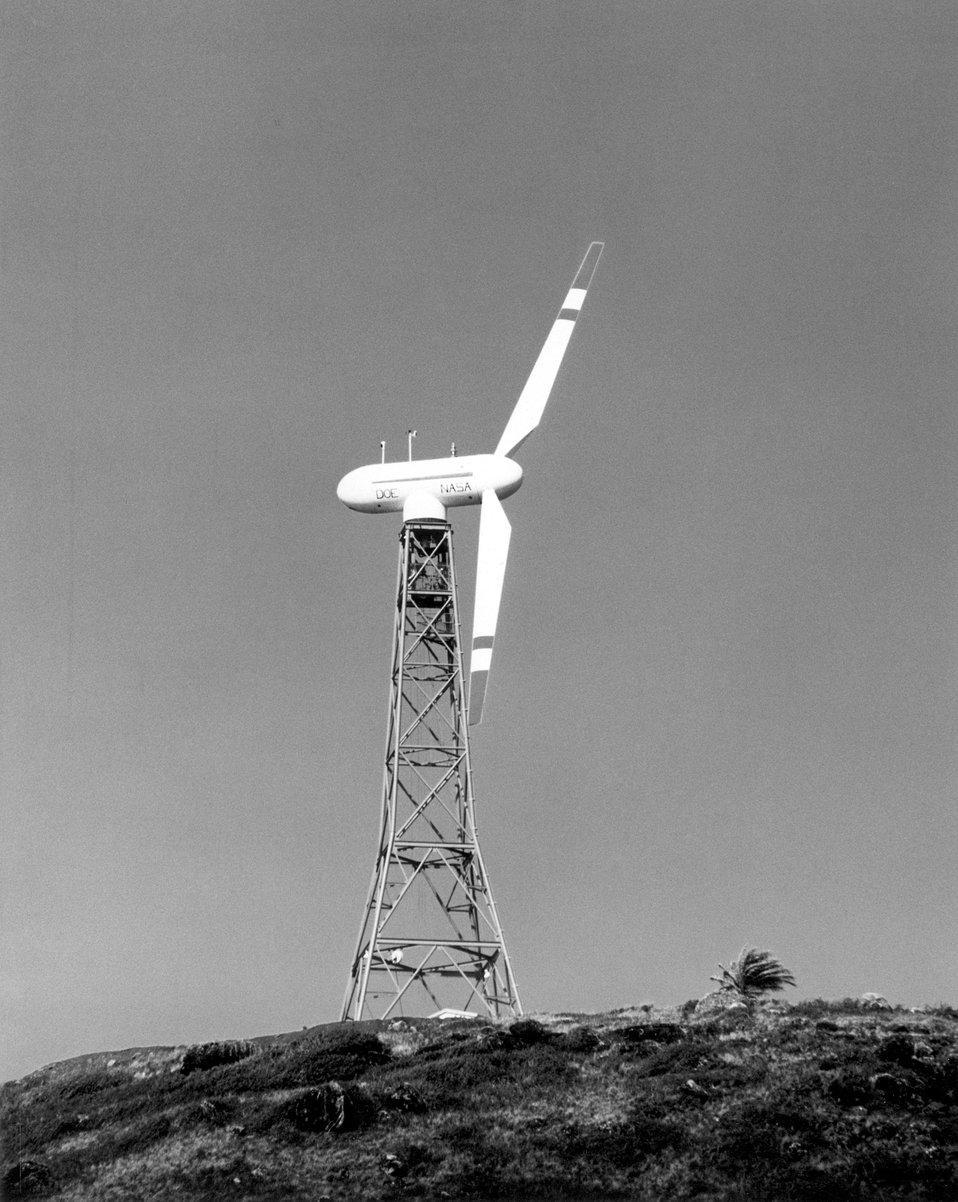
The ocean breezes off the north shore of Oahu, Hawaii, known for producing giant waves for the world's best surfing, now will be captured and converted into electricity. c. 1980